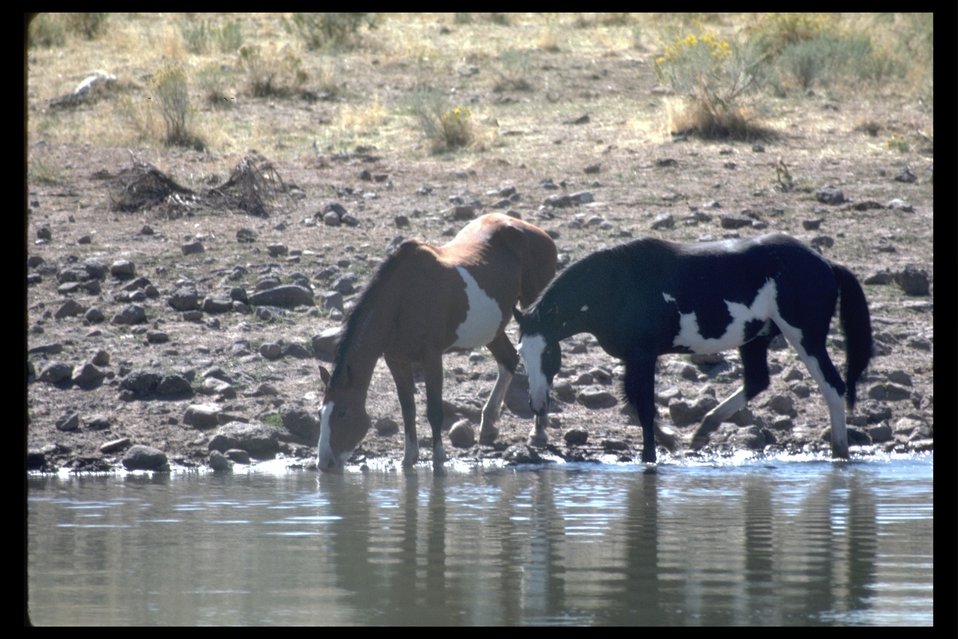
Pintos at water in South Steens HMA.